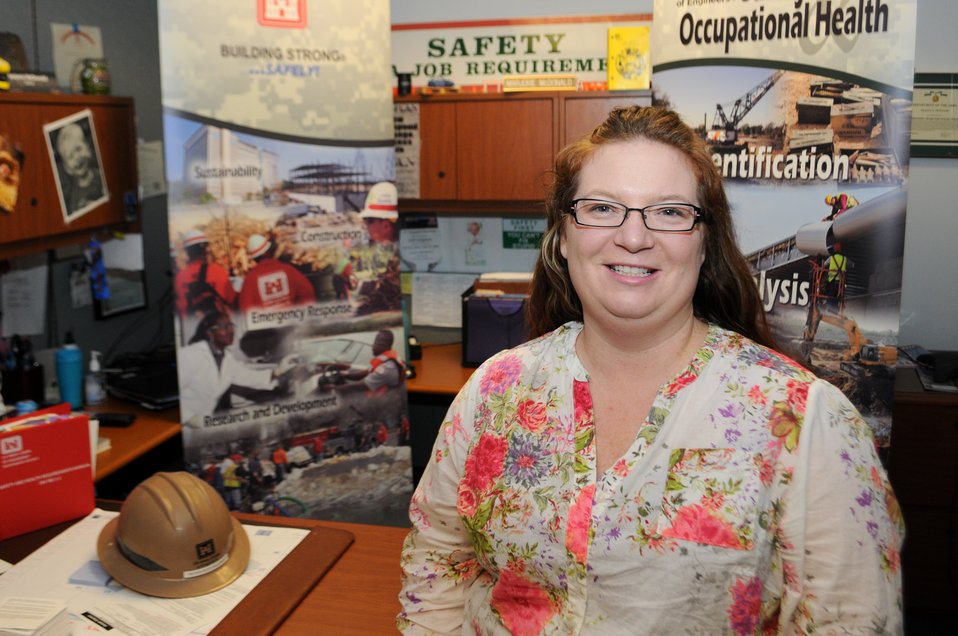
Marjorie McDonald, chief of safety at the U.S. Army Corps of Engineers Sacramento District, will be one of a handful of Corps employees coaching small business owners about safety at an annual convention in Sparks, Nev., April 10-12, 2012. McDonald and her district safety team hope to advise small business owners on assembling safety plans and other risk-analysis documents, required before work can begin on most Corps projects.